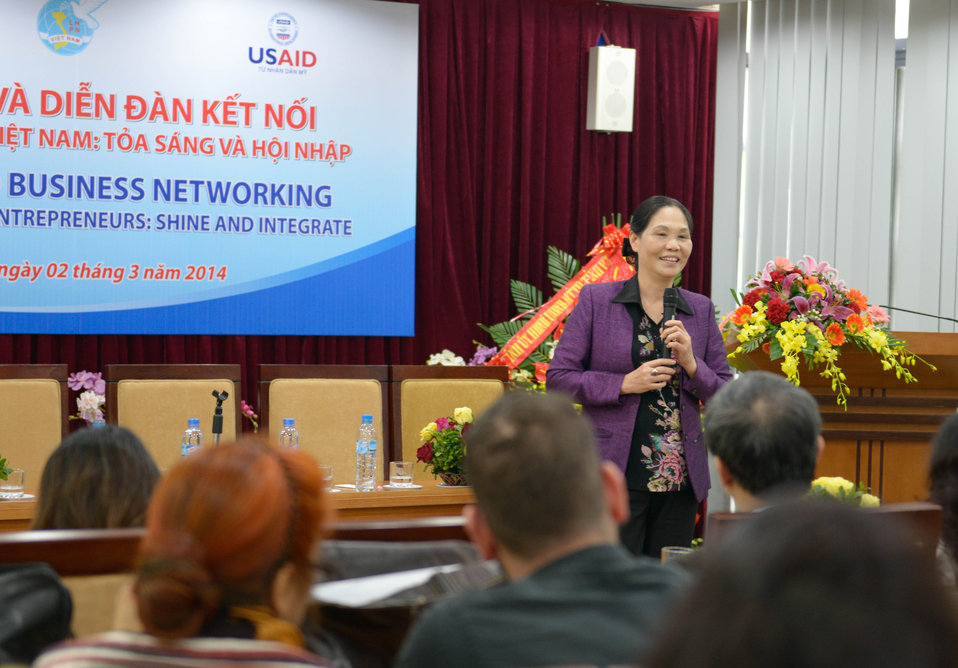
International Women's Day Seminar for female entrepreneurs

Phu Tho, Vietnam. March 1, 2014.